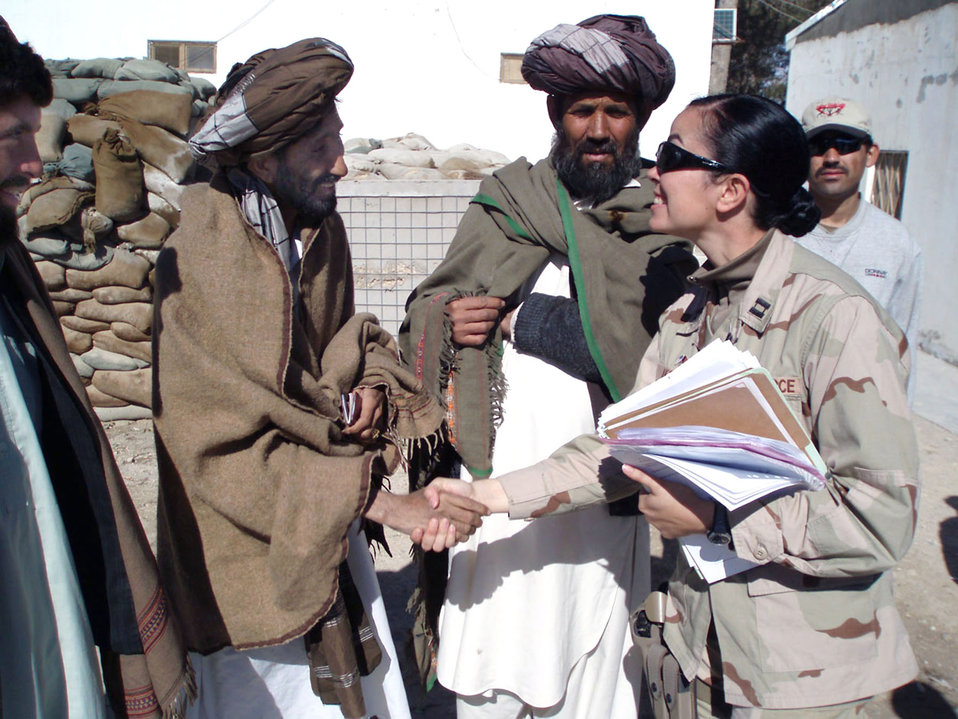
Reconstruction team holds first vendor fair

Capt. Aine Akeley meets local contractors who attended the first Qalat Vendor's Fair Nov. 26 in Qalat, Afghanistan. Forty contractors from the Zabul Province attended the event. Captain Akeley is the services and commodities chief for the Regional Contracting Center.